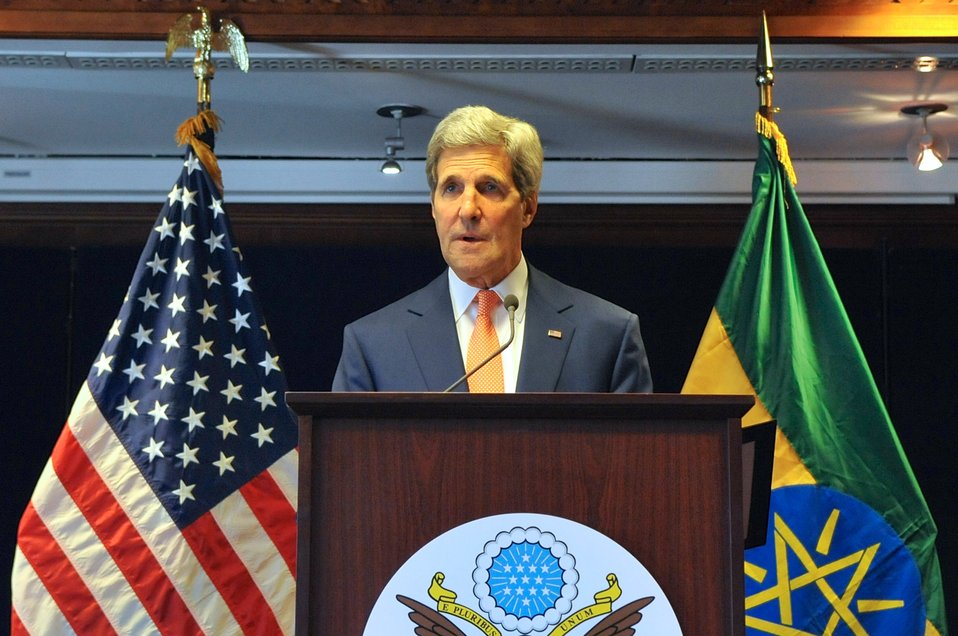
Secretary Kerry Speaks During News Conference in Ethiopia

U.S. Secretary of State John Kerry speaks during a news conference on May 1, 2014, that followed a round of government meetings in Addis Ababa, Ethiopia, at the outset of the six-day trip through Africa.